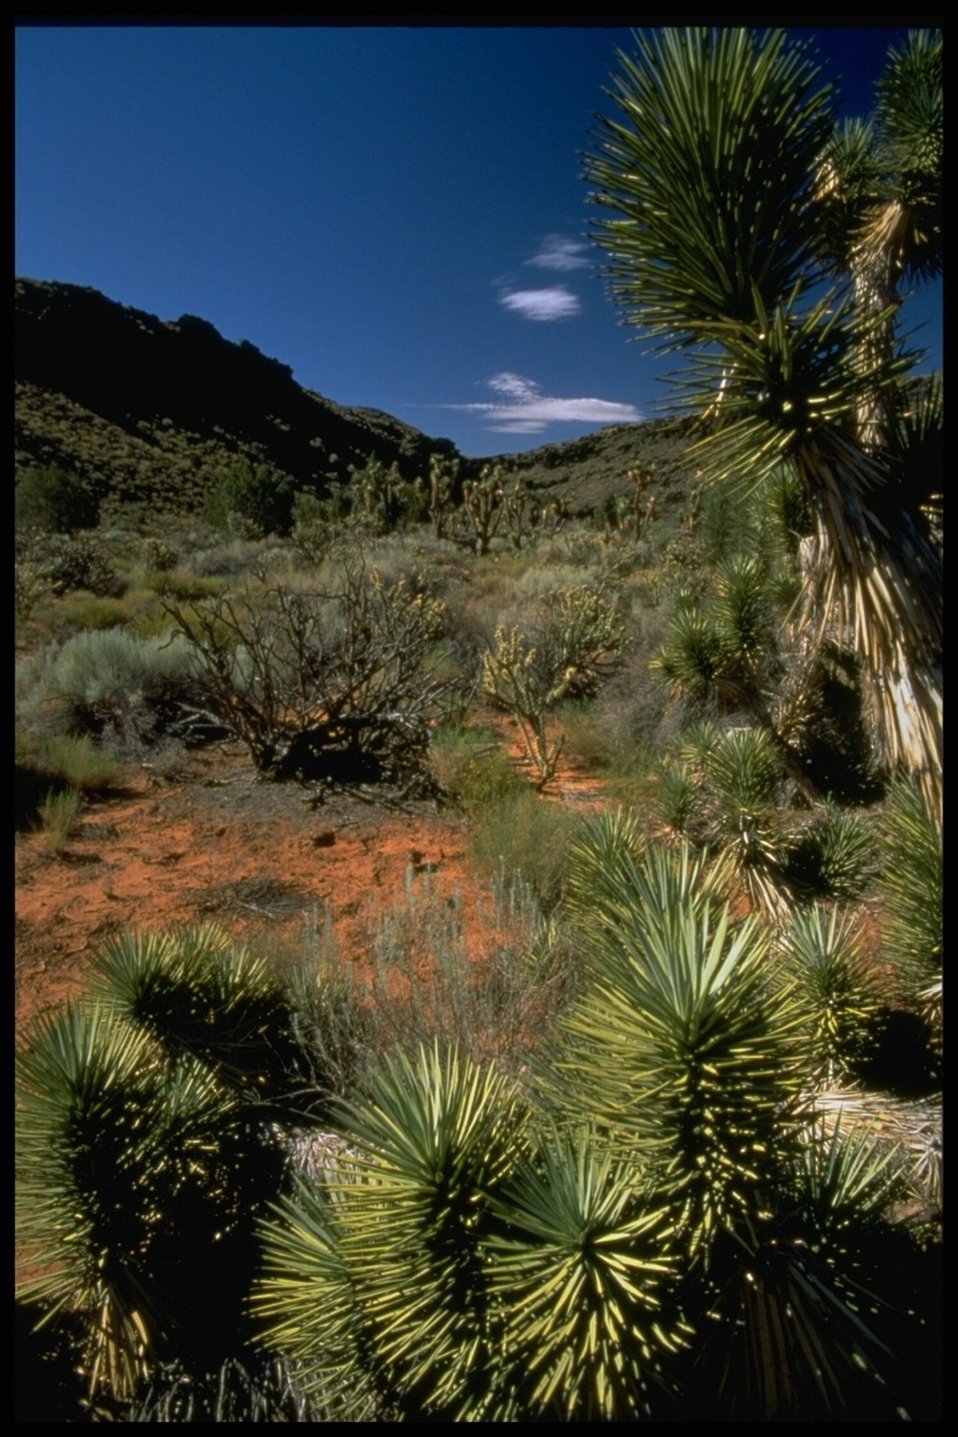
A great view of cacti and with a wonderful mountain backdrop.